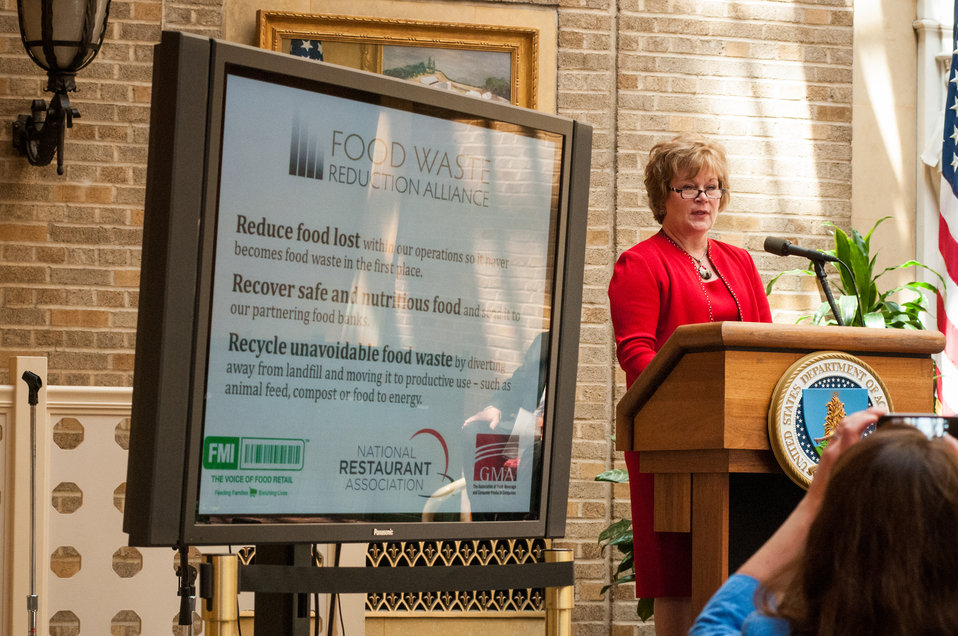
President and Chief Executive Officer (CEO) of the Food Marketing Institute Leslie G. Sarasin discusses the importance of public and private cooperation in the effort to end hunger in the U.S. during the U.S. Food Waste Challenge sponsored by the U.S. Department of Agriculture (USDA) and Environmental Protection Agency at USDA in Washington, D.C. on Tuesday, Jun. 4, 2013. The U.S. Food Waste Challenge is a nationwide effort to reduce, recover and recycle U.S. food waste.